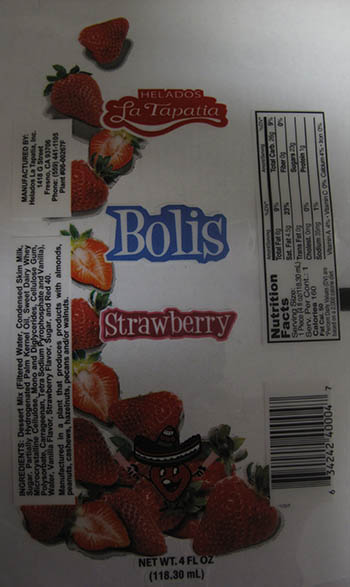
RECALLED – Ice cream products

March 19, 2014 – Product Recall – Helados La Tapatia, Inc. Recalls Products Because of Possible Health Risk.